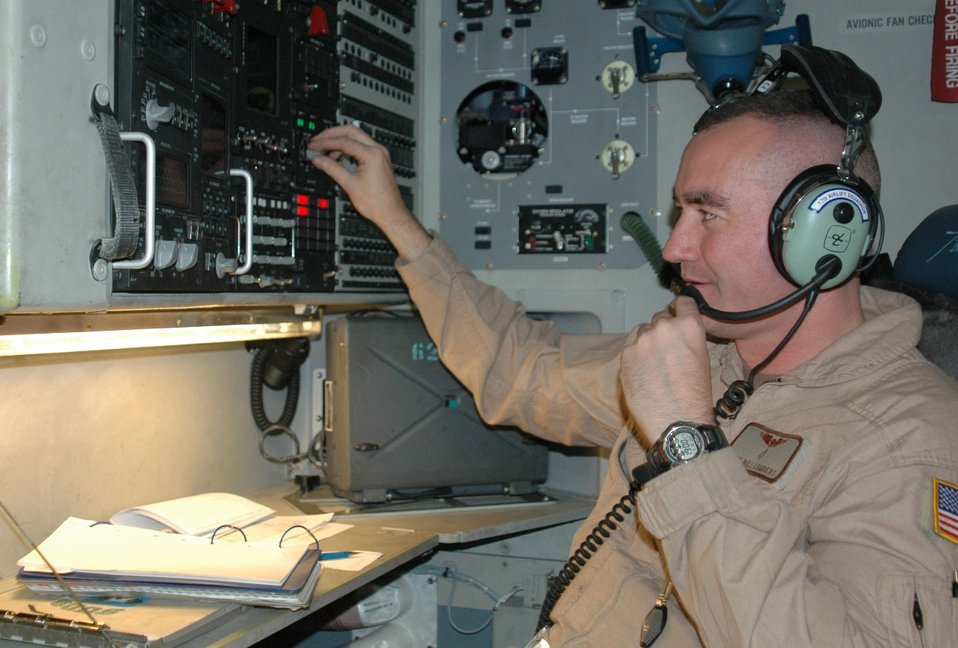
Long hours the norm for deployed Globemaster crews

Master Sgt. Bill Lambert, a C-17 Globemaster III loadmaster, changes settings on the radio system in his aircraft before a mission in Southwest Asia. The sergeant is with Detachment 2, 817th Expeditionary Airlift Squadron. The unit flies C-17s throughout the region, carrying troops and supplies.